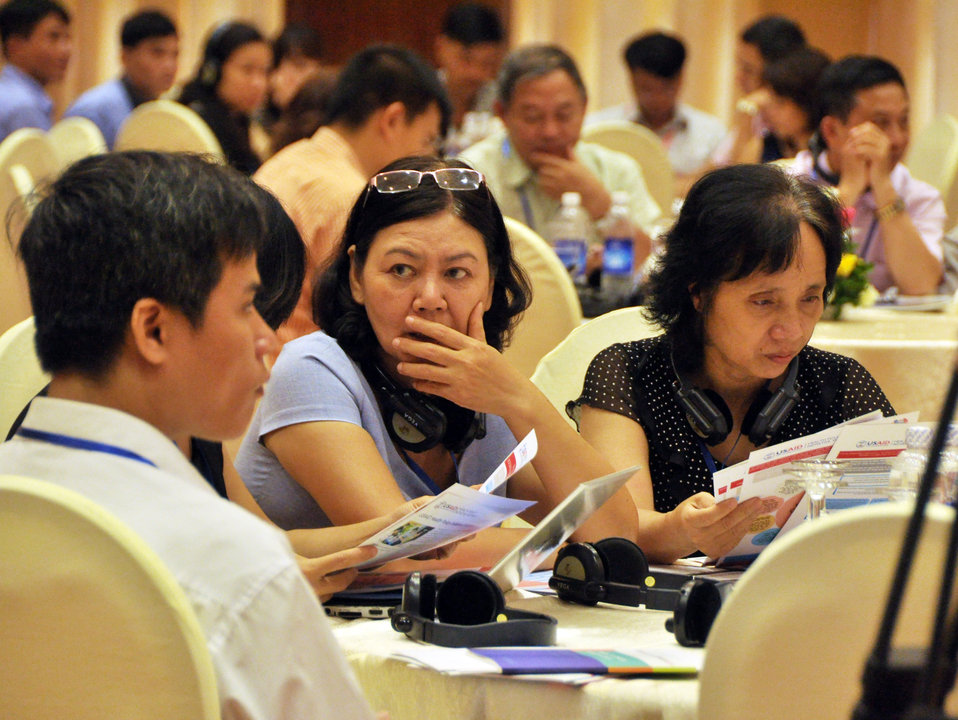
USAID Health Policy Initiative End of Project Workshop

Hanoi, August 14, 2013.